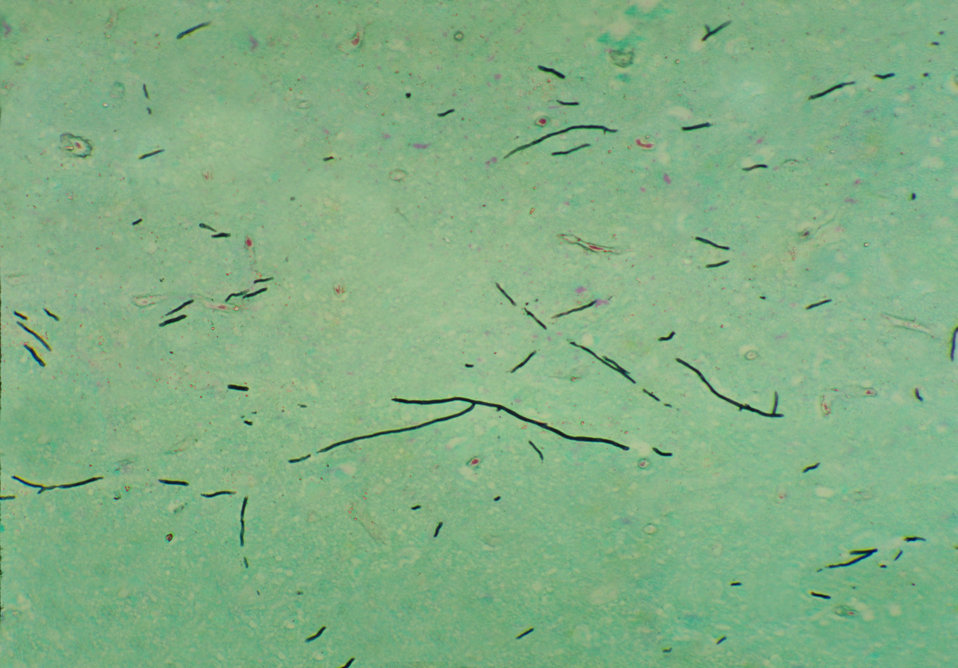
Note the histopathologic changes in this pigeon brain tissue using Methenamine silver stain due to Ochroconis gallopavum, formerly Dactylaria gallopava.